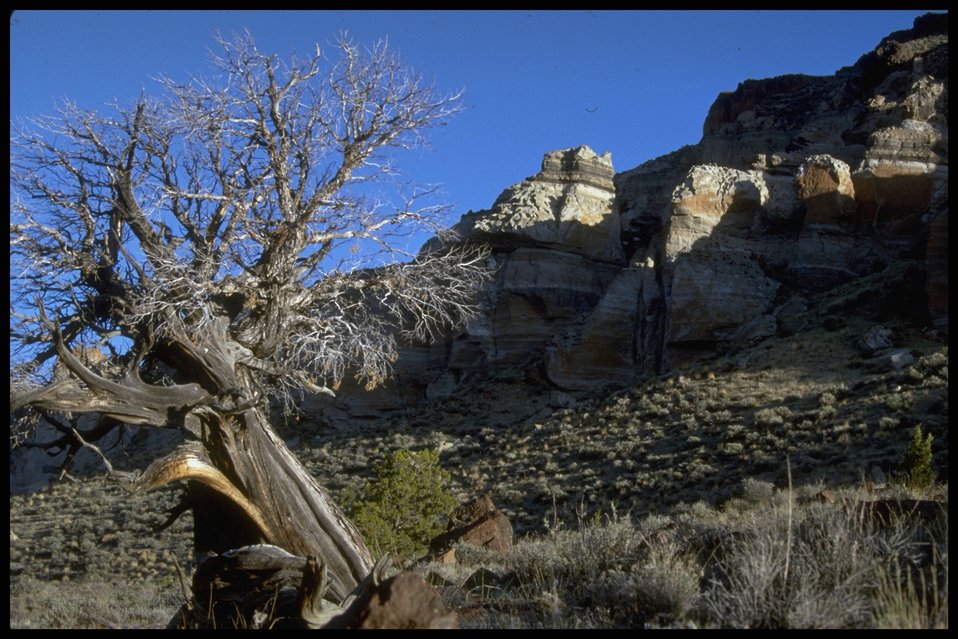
Greaser Canyon, Lakeview District.